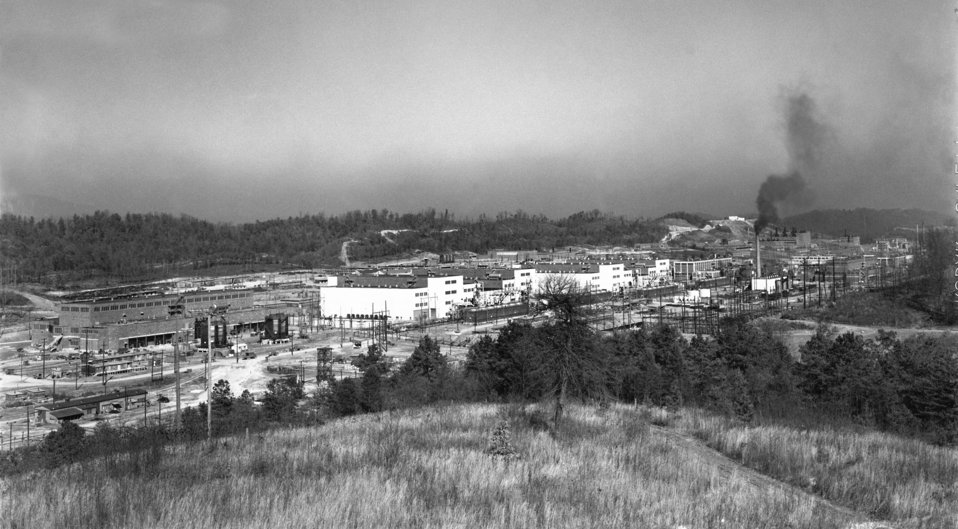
Y-12 Tennessee Eastman Plant Oak Ridge 1946

3283-6bb DOE photo Ed Westcott 1946 Oak Ridge Tennessee